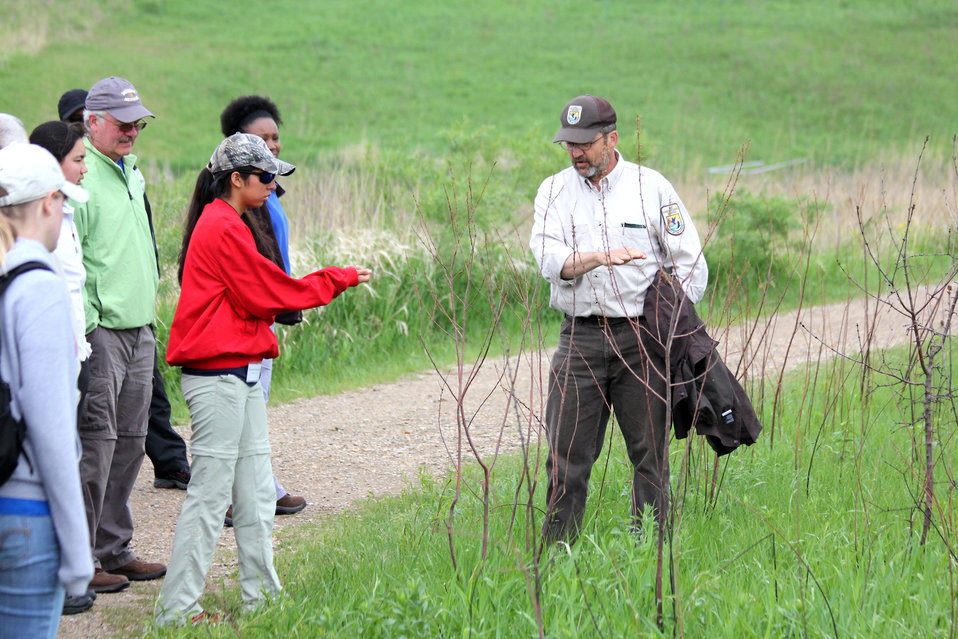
CDIP 2012 Fergus Falls

Habitat management lessons